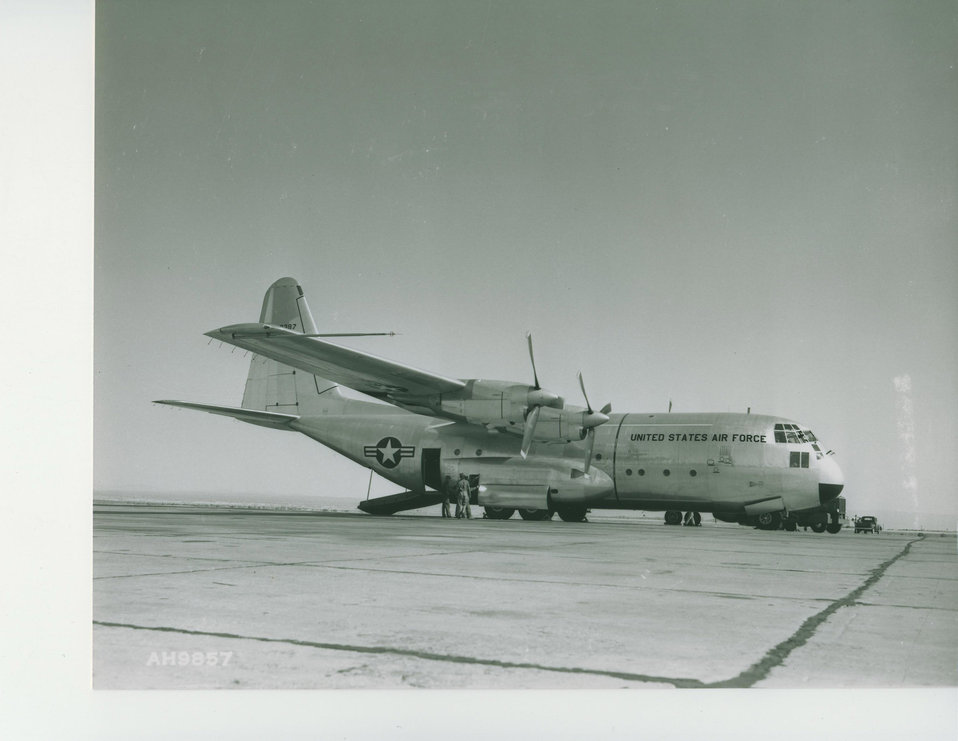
YC-130, prototype for the C-130 Hercules

The YC-130, prototype for the classic transport aircraft, completed its first flight Aug. 23, 1954.